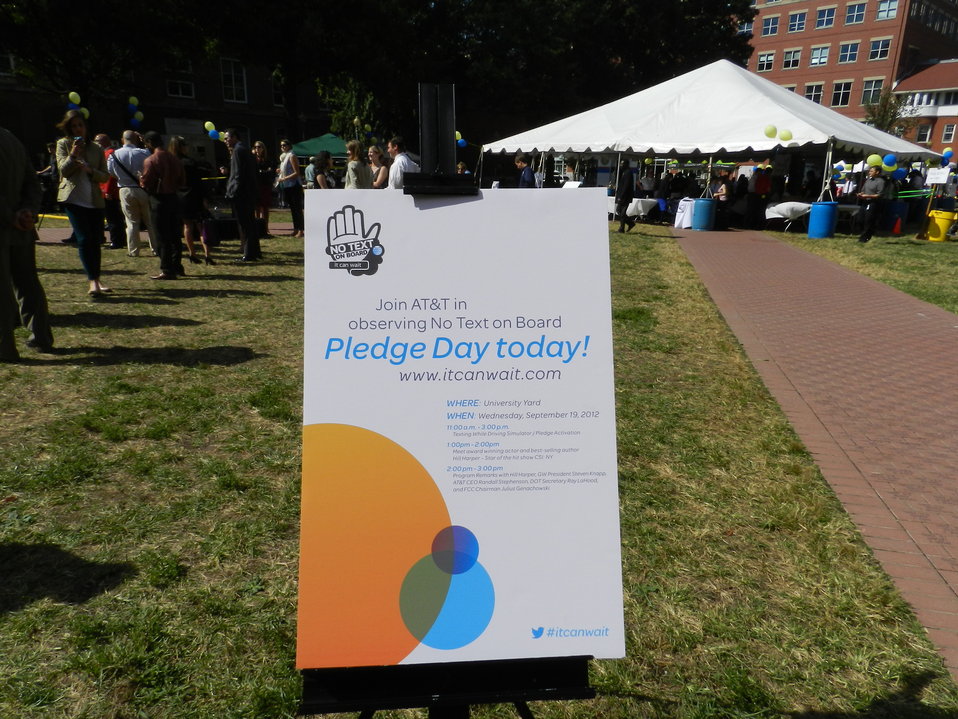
It Can Wait Pledge Day 9.19.12

‘No Text On Board’ Pledge Day Event, The George Washington University, Washington, D.C.
September 19, 2012